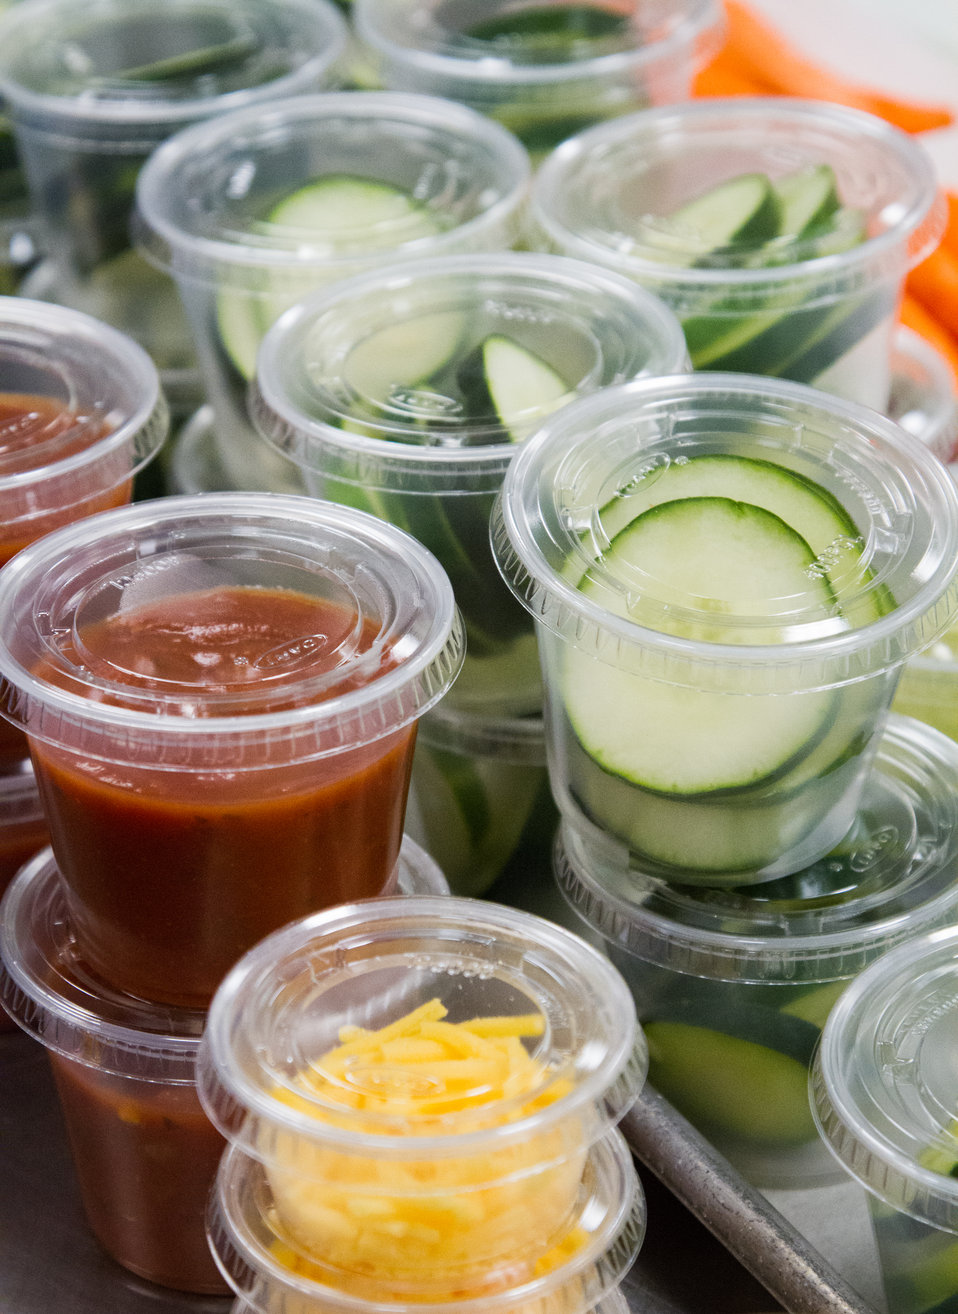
Taco sauce, reduced fat/reduced salt cheese, carrot sticks, and cucumber slices are some of the side selections at the Harmony Hills Elementary School cafeteria, in Silver Spring, MD, on Thursday, March 7, 2013. USDA's Food and Nutrition Service administers several programs that provide healthy food to children including the National School Lunch Program, the School Breakfast Program, the Child and Adult Care Food Program, the Summer Food Service Program, the Fresh Fruit and Vegetable Program, and the Special Milk Program. Administered by State agencies, each of these programs helps fight hunger and obesity by reimbursing organizations such as schools, childcare centers, and after-school programs for providing healthy meals to children. Harmony Hills participates in the Maryland Meals for Achievement (MMFA), In-Classroom breakfast program, the fresh fruit and vegetable program, and the summer food service program. Learn more by visiting www.fns.usda.gov and twitter @USDANutrition.